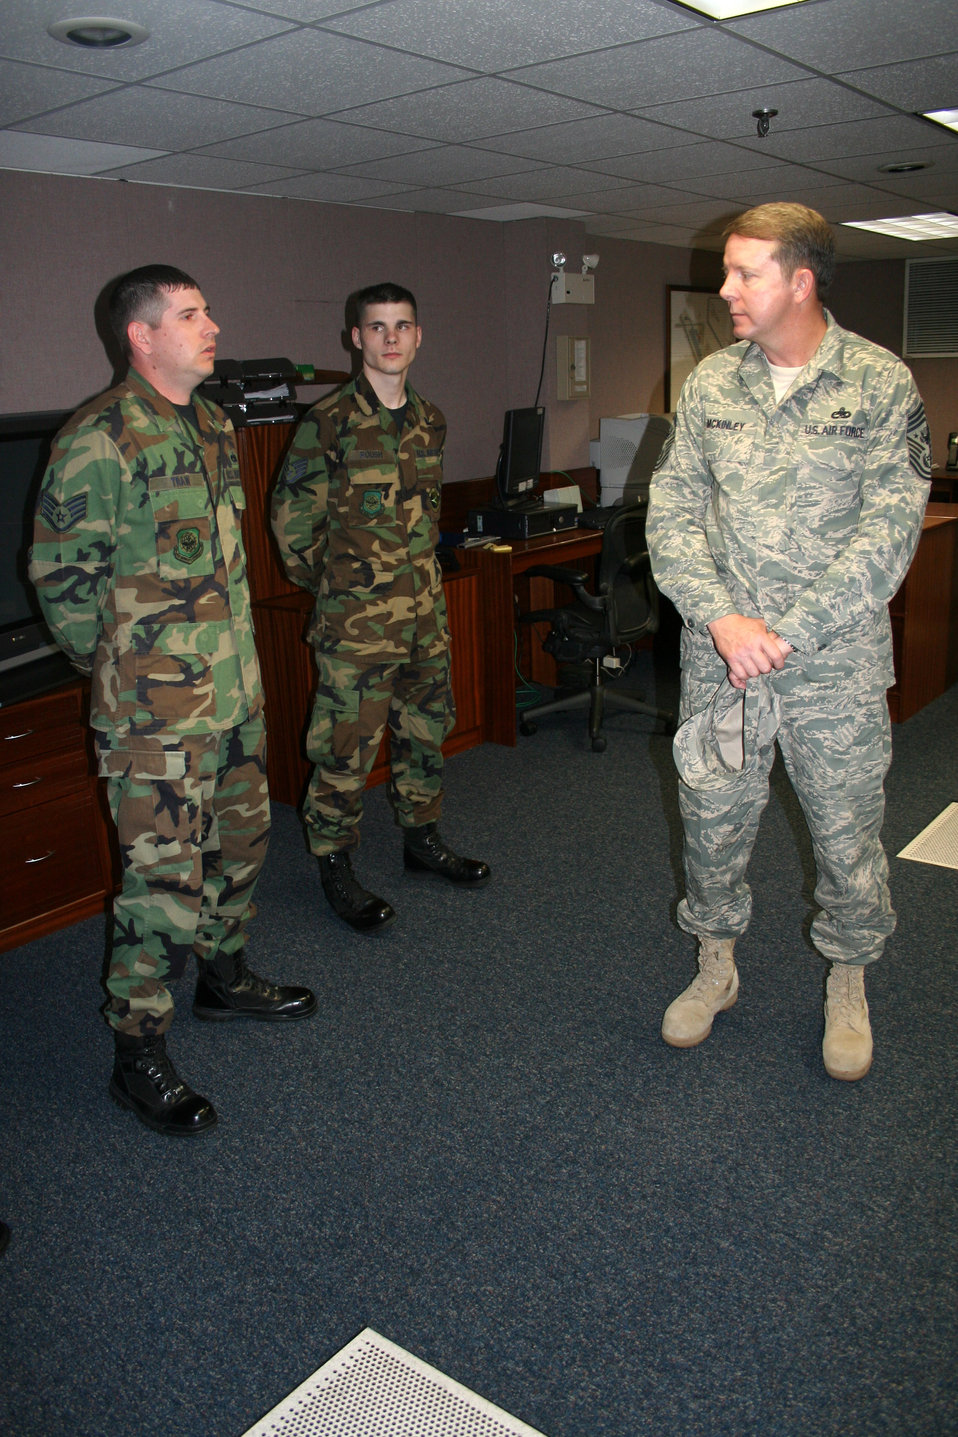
CMSAF introduces, defines warrior ethos

Chief Master Sgt. of the Air Force Rodney J. McKinley speaks with Staff Sergeants Kenneth Traw and Gregory Roush at Lajes Field, Azores. Chief McKinley is touring bases throughout the U.S. Air Forces in Europe promoting several new changes on the way, including uniforms, updated enlisted performance reports, and a warrior ethos. Sergeants Traw and Roush are from the 729th Air Mobility Squadron.